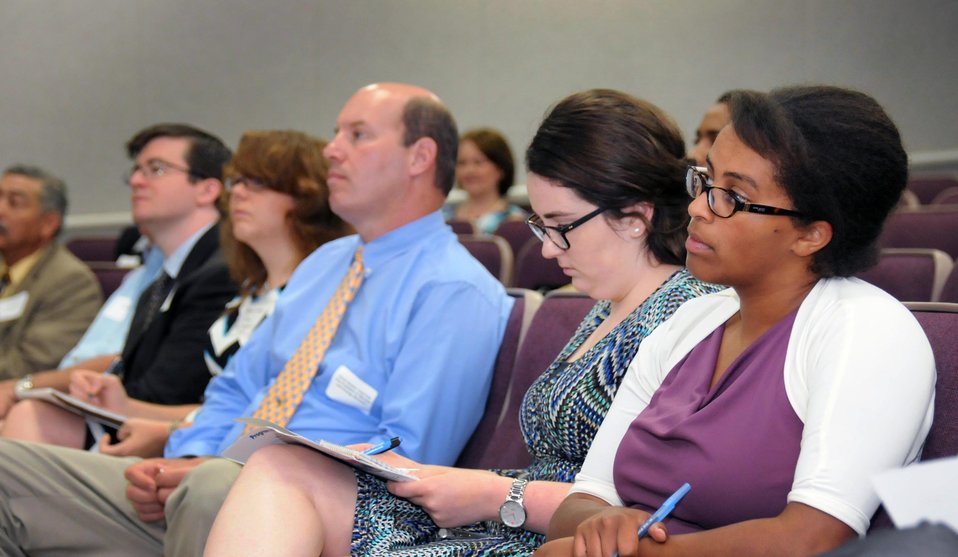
Stakeholders, government and regional leaders listen to Agriculture Deputy Secretary Krysta Harden at the White House Summit on Working Families in Petersburg, VA on Wednesday, Jun. 11, 2014. This forum is part of a series of regionally hosted conversations leading up to the June 23 White House Summit on Working Families, at the Virginia State University, in Petersburg, VA on Wed. June 11, 2014.